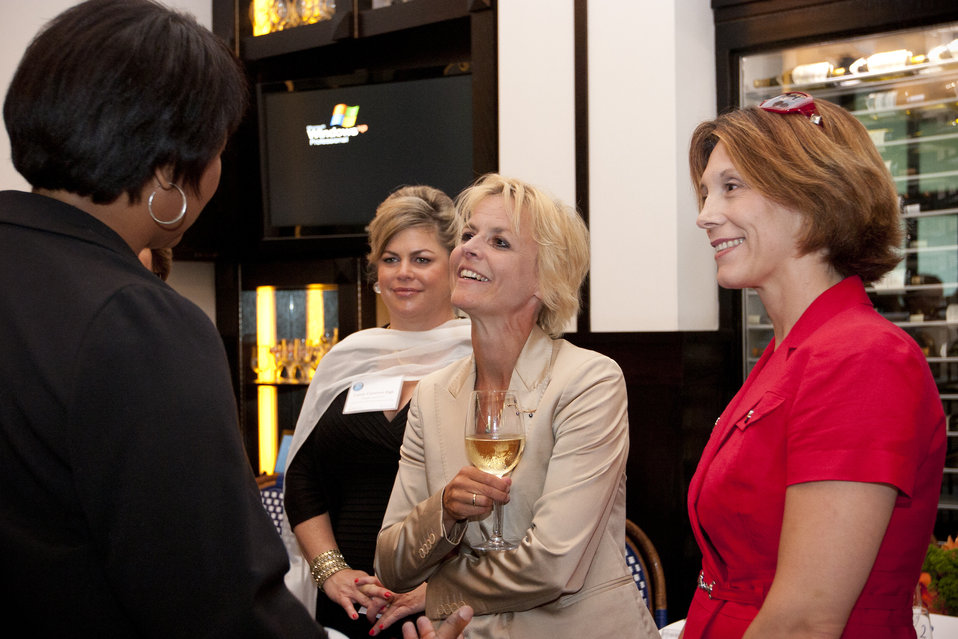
WomenandEnergy 18